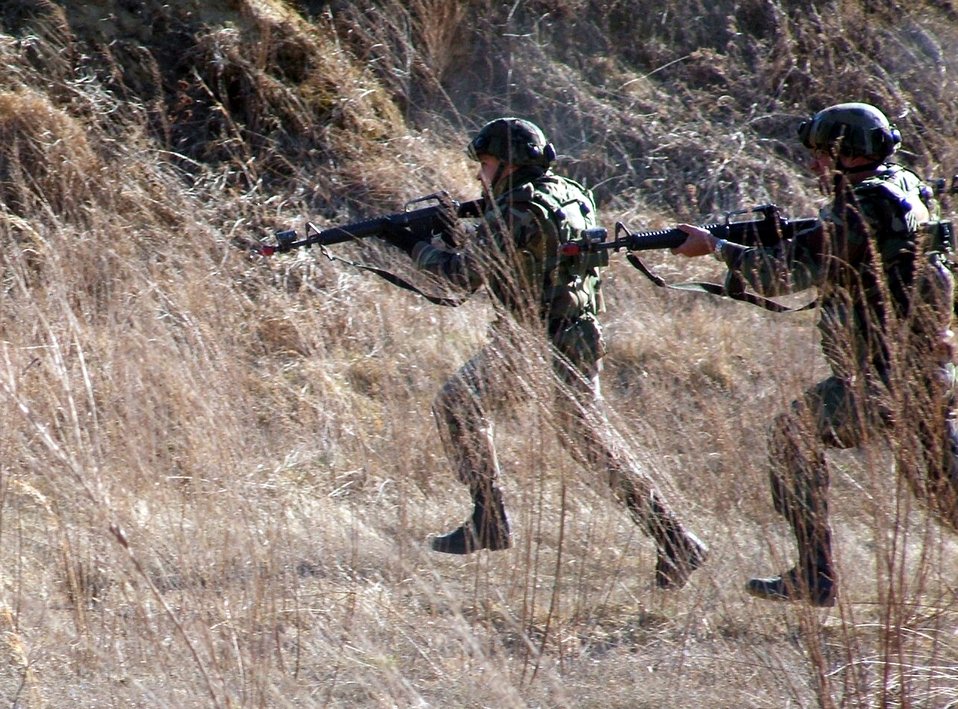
Contingency skills training

Airmen engage simulated hostile forces while practicing combat tactics and squad patrolling maneuvers at Fort Dix, N.J., on Monday, March 27, 2006. More than 140 Airmen are participating in the Air Force Integrated Contingency Skills Training Course 06-3, which includes combat tactics and convoy operations.